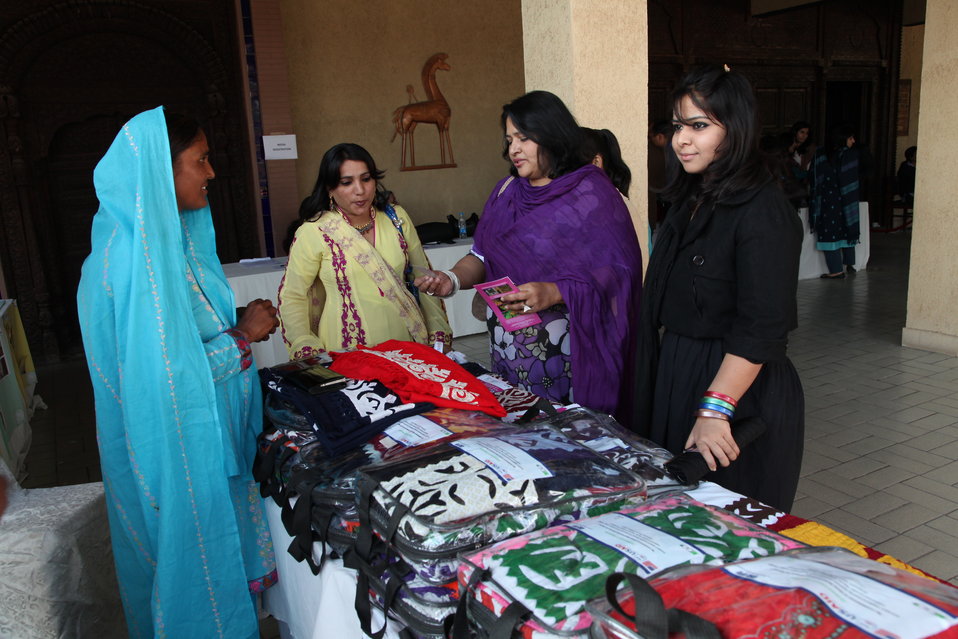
A beneficiary of GENDER EQUITY PROGRAM from ditrict kashmore

A beneficiary of GENDER EQUITY PROGRAM from